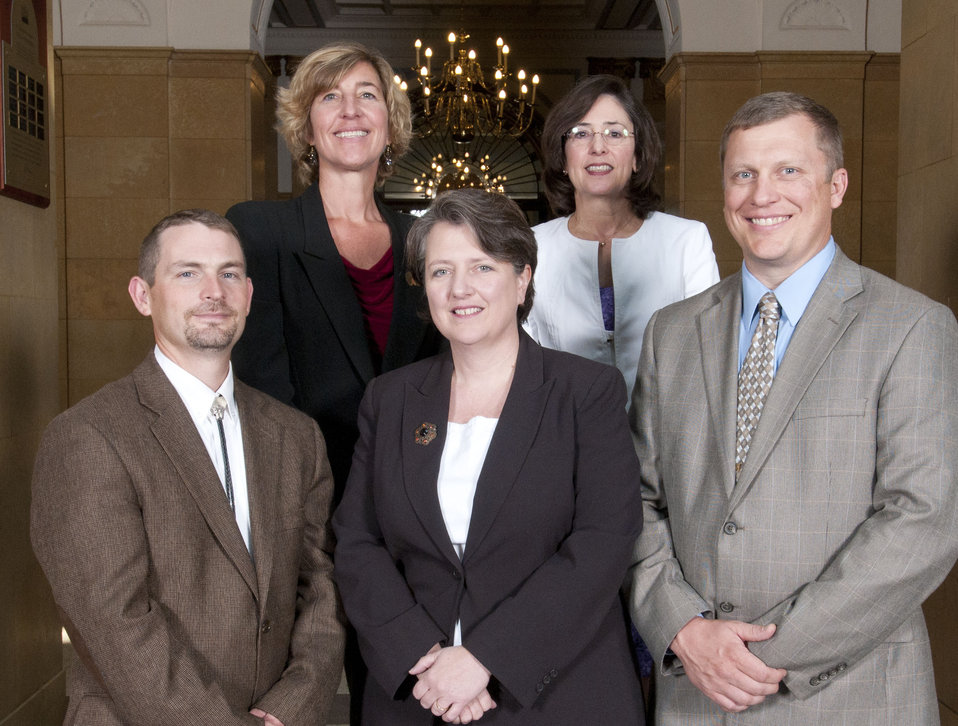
Sage Grouse Initiative Team, Natural Resources Conservation Service, Washington, DC. Timothy V. Griffiths and David E. Naugle, Group Leaders. For exemplary leadership in developing and implementing NRCS’s new and exciting Sage-Grouse Initiative, a spatially targeted, landscape scale approach to achieving world-class wildlife conservation through sustainable ranching.
On September 14, 2011 in the patio of the Whitten Building Patio of the US Department of Agriculture in Washington, DC.